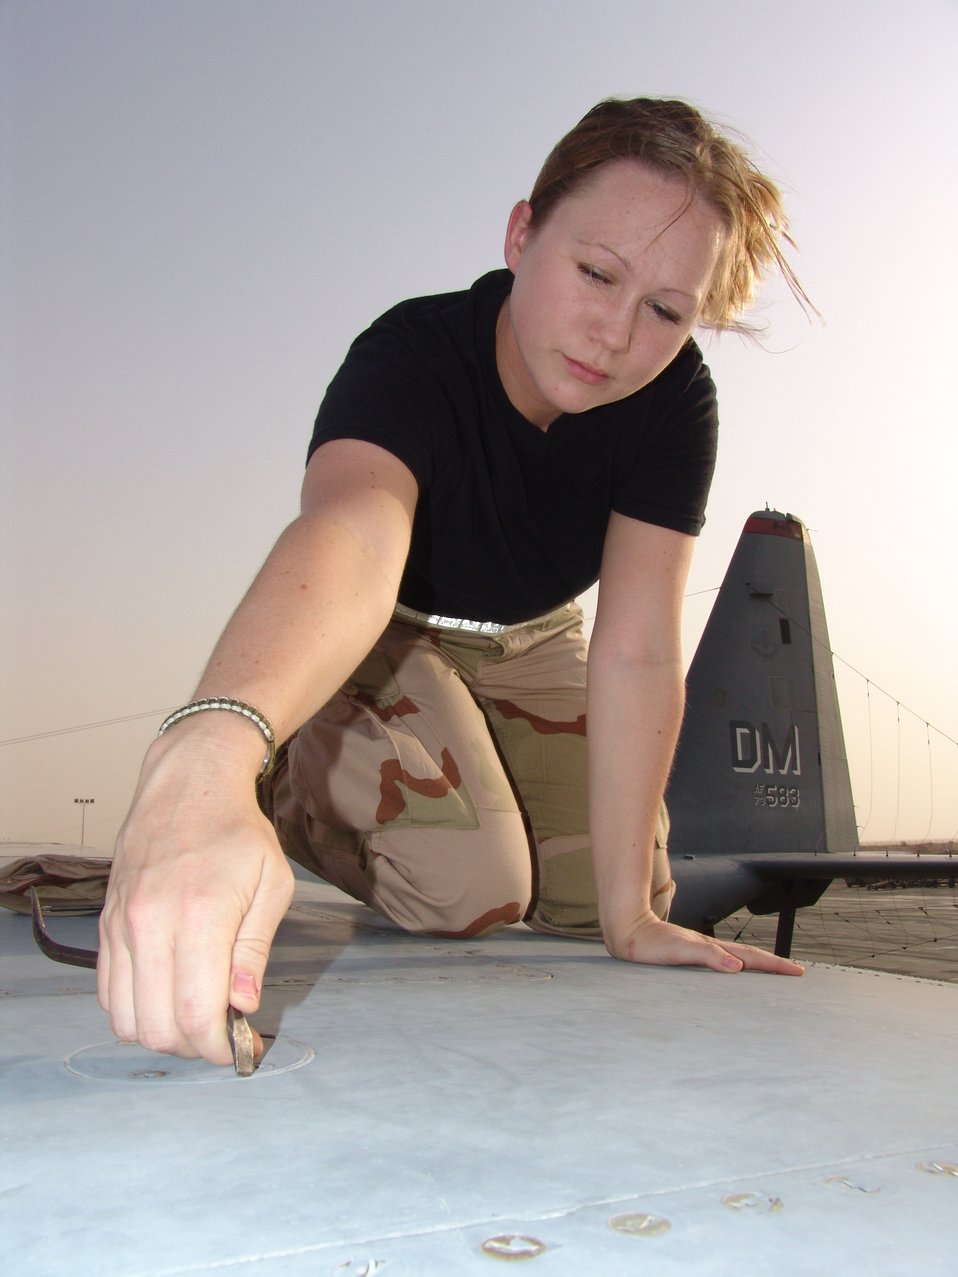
Inspecting the 'hole' aircraft

SOUTHWEST ASIA -- Staff Sgt. Emily Frances performs maintenance on an EC-130H Compass Call at a forward-deployed location. She is an integrated flight controls specialist with the 43rd Expeditionary Electronic Combat Squadron and is deployed from Davis-Monthan Air Force Base, Ariz.